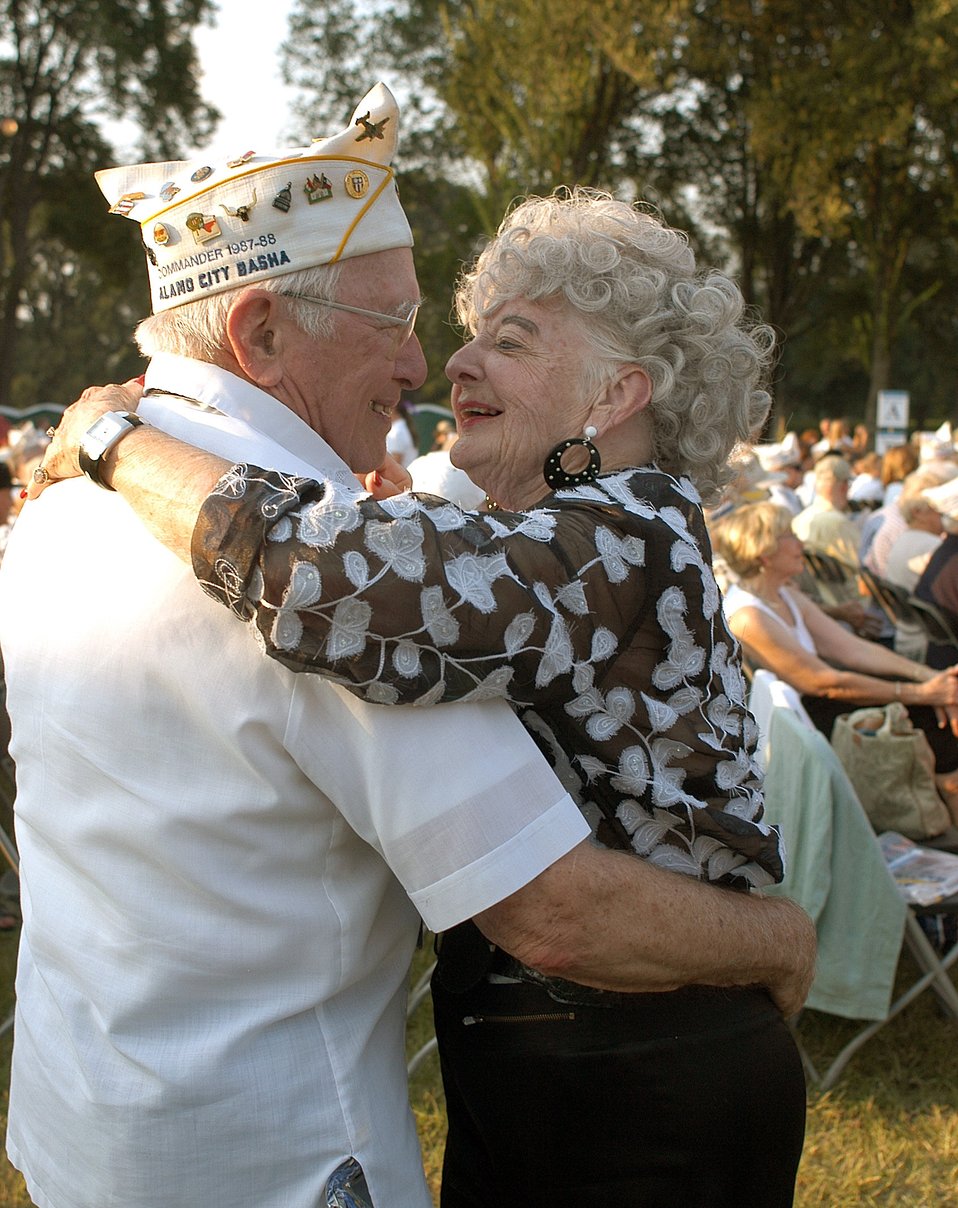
World War II vets honored at 60th anniversary of war's end

WASHINGTON -- August Offer and Roberta Mahan, both 88, dance to the music of the U.S. Navy Band at the World War II 60th Anniversary Commemoration on Sept. 2 at the World War II Memorial. Mr. Offer, a World War II veteran who served in the Army Air Corps for two years, and Ms. Mahan are engaged.